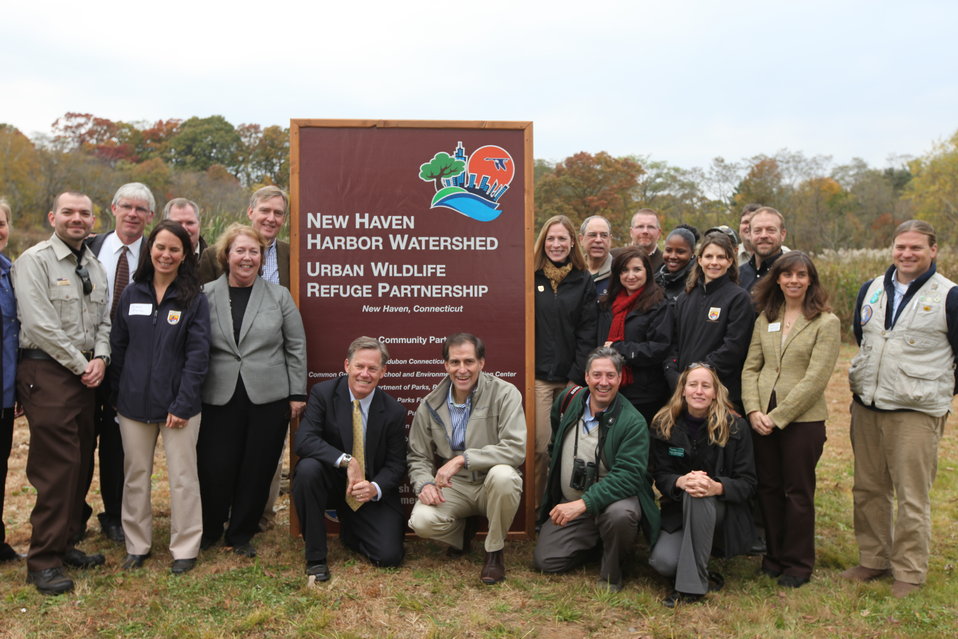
Audubon Connecticut

U.S. Fish and Wildlife Service staff and Audubon Connecticut.